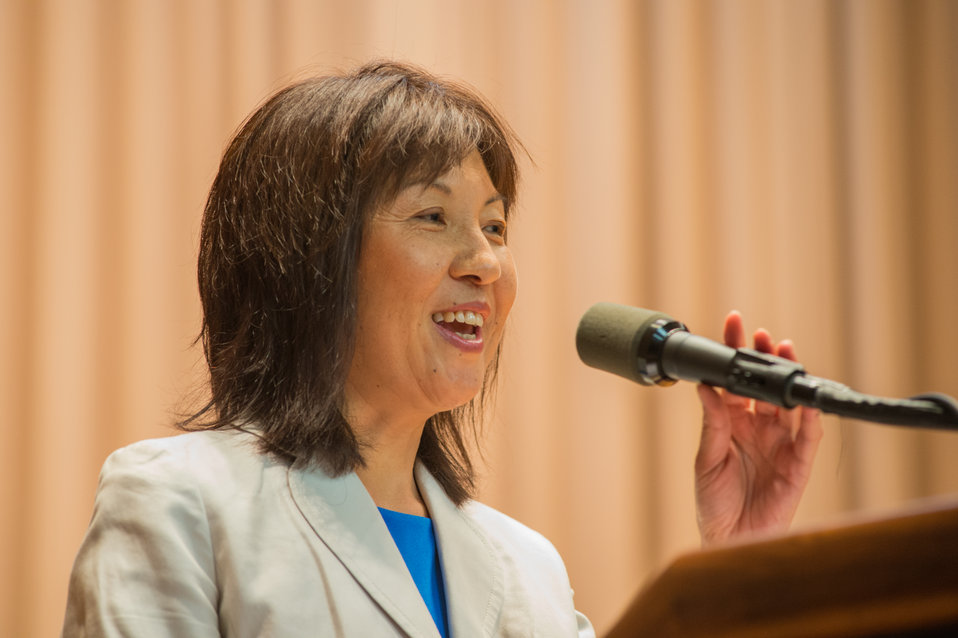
U.S. Department of Agriculture (USDA) Agricultural Marketing Service (AMS) Deputy Administrator Ruihong Guo as the Mistress of Ceremonies welcomes employees and guests to the Asian Pacific American Heritage Observance at USDA in Washington, D.C. on Thursday, May 22, 2014. The theme of the event was, “Diverse Leadership and Expanding Opportunity: Am Imperative for America.”